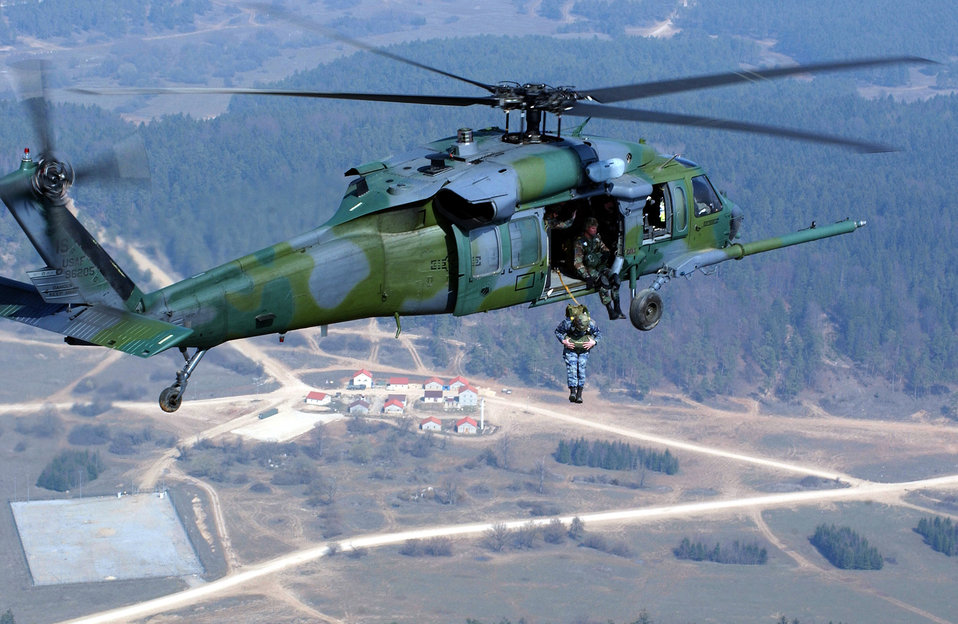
Exercise, exercise

HOHENFELS ARMY AIR FIELD, Germany -- Senior Master Sgt. Robert Henson jumps from an HH-60G Pave Hawk here April 1. Sergeant Henson is the operations superintendent for the 786th Security Forces Squadron at Sembach Air Base, Germany, and is participating in a joint combat search and rescue exercise.